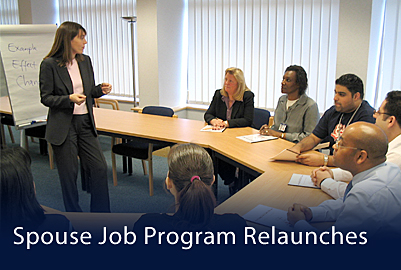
Spouse Job Program